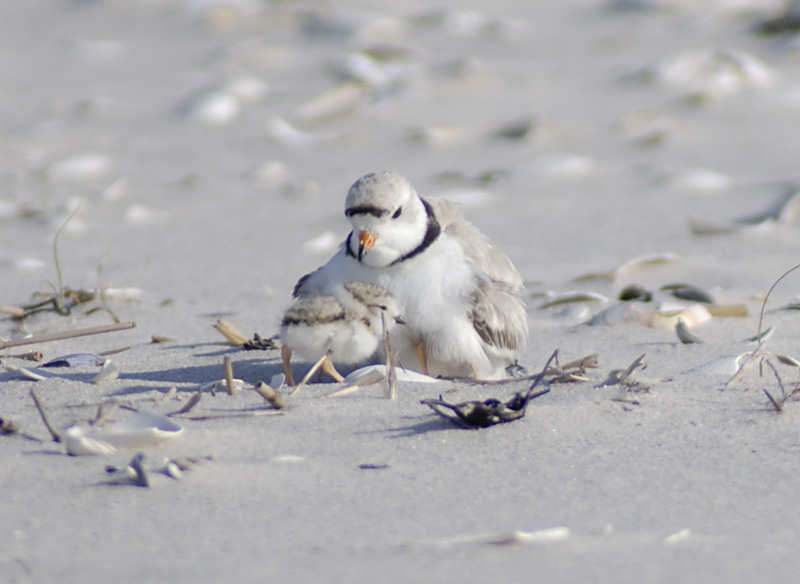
piping plover with chick

endangered in part of its range, threatened elsewhere
Photo: Dave Frederick, Creative Commons
Refuges around the Great Lakes and along the Northeast coast from Virginia to Maine work intensively to protect the beach nesting sites of this vulnerable shorebird.